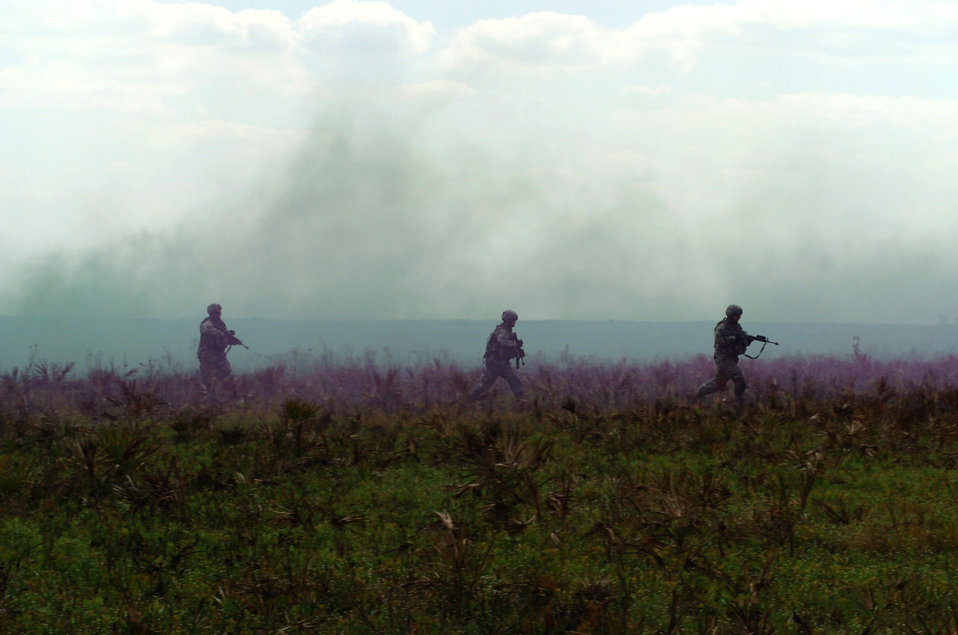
Atlantic Strike III

Members of a 42-person scout team advance on a mock village at Avon Park, Fla., March 29, 2006, as part of Atlantic Strike III, an arena for realistic urban warfare training.